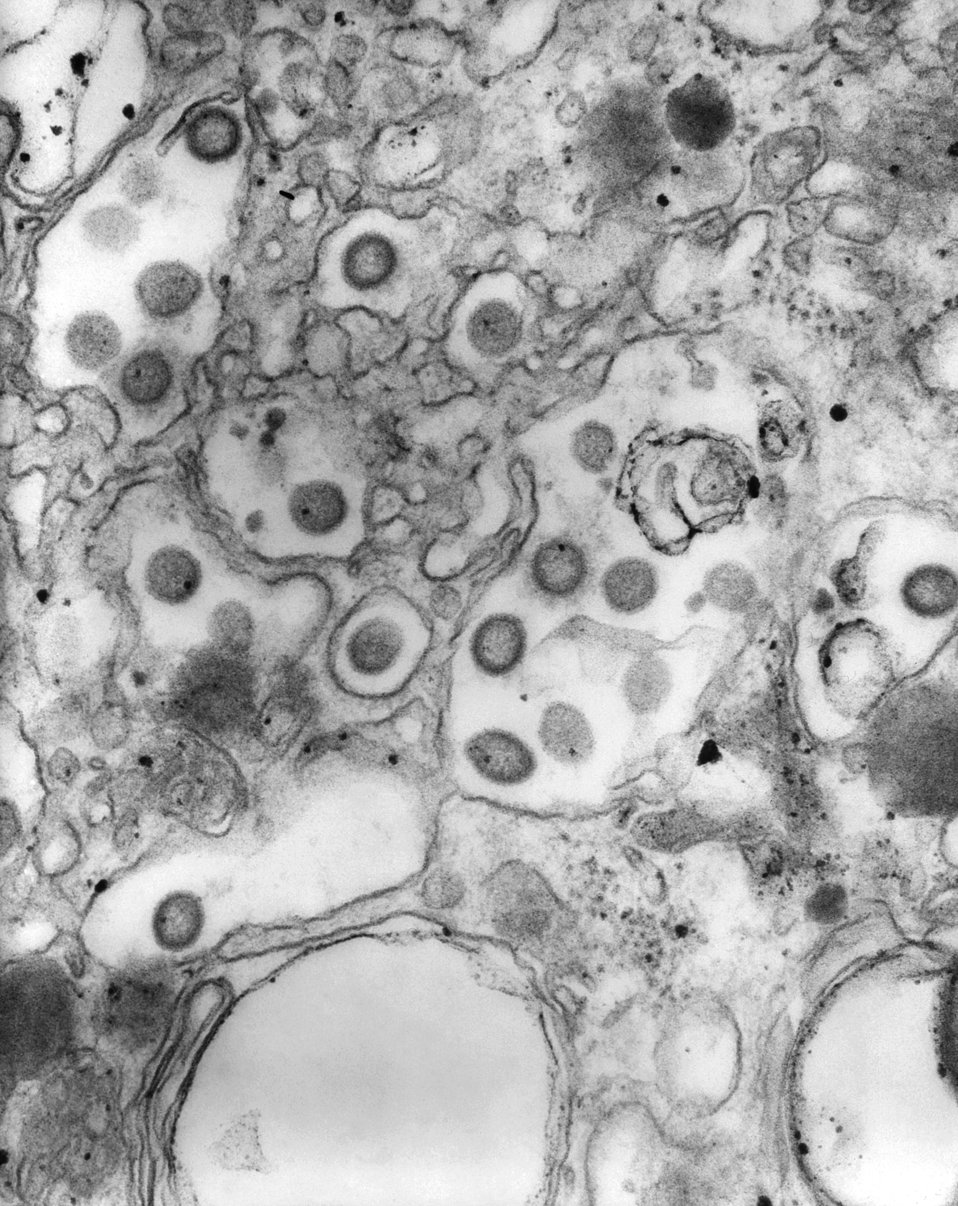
This negatively-stained transmission electron micrograph (TEM) revealed the presence of numerous Ganjam virus virions in this tissue specimen. This Bunyaviridae family member is antigenically, closely related to, and an Asian variant of, the Nairobi sheep disease virus (NSDV).